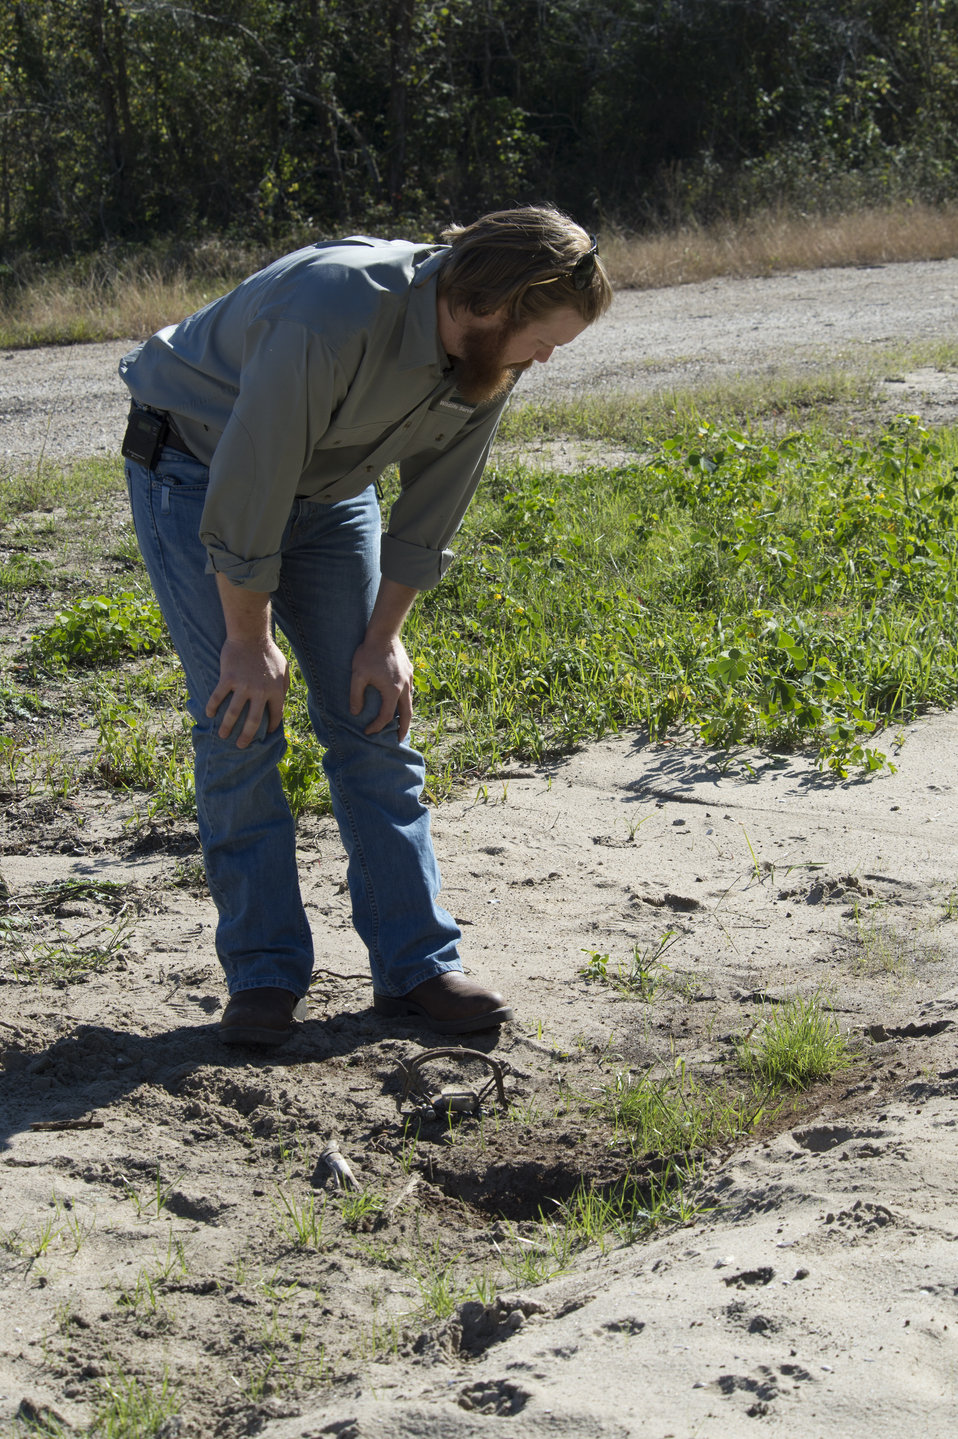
The U.S. Department of Agriculture’s (USDA) Animal and Plant Health Inspection Service (APHIS) Wildlife Services (WS) assists with the humane removal of animals from the Naval Air Station Joint Reserve Base in Belle Chase, LA on Wednesday, Nov. 20, 2013. Animals that wander onto the airstrip are dangerous to aircraft on take off and landing.